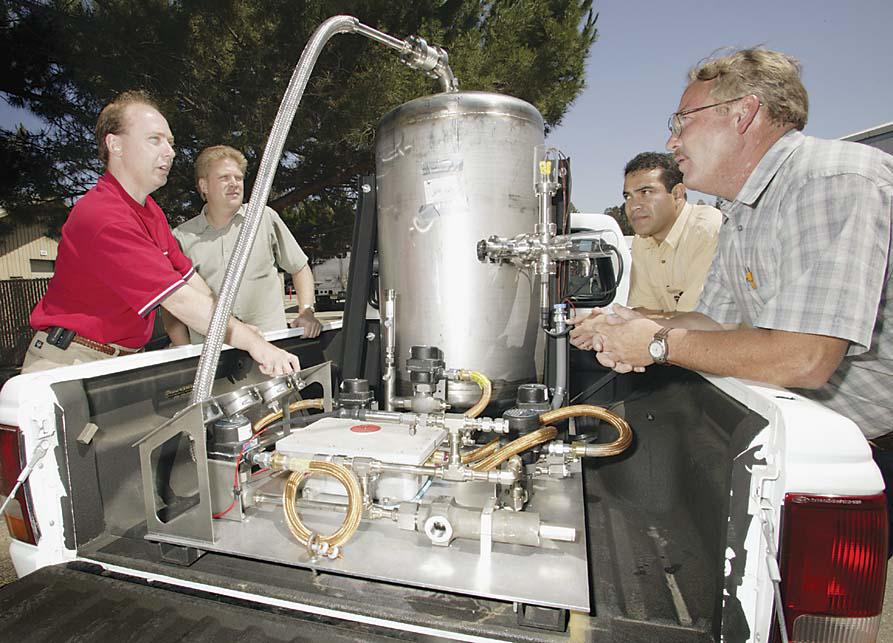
HYBRID HYDROGEN FUEL STORAGE SYSTEM DEVELOPED AT DOE'S LAWRENCE LIVERMORE NATIONAL LABORATORY.

RESEARCHERS AT DOE'S LLNL HAVE DEVELOPED A HYBRID INSULATED HYDROGEN FUEL STORAGE SYSTEM FOR USE IN HYDROGEN POWERED VEHICLES. THE TEAM FOCUSED ON OVERCOMING ONE OF THE MAJOR BARRIERS TO PRACTICAL HYDROGEN-FUELED VEHICLES, WHICH IS ON-BOARD STORAGE. THEY DEVELOPED A SAFE, COMPACT HYDROGEN STORAGE TANK THAT COMBINES THE ENERGY EFFICIENCY OF THE LOCAL DRIVING, CONVENTIONAL COMPRESSED HYDROGEN GAS WITH THE LONG-DISTANCE DRIVING RANGE OF CRYOGENIC COMPRESSED GASEOUS OR LIQUID HYDROGEN. THE TANK CAN HOLD BOTH TYPES OF HYDROGEN.